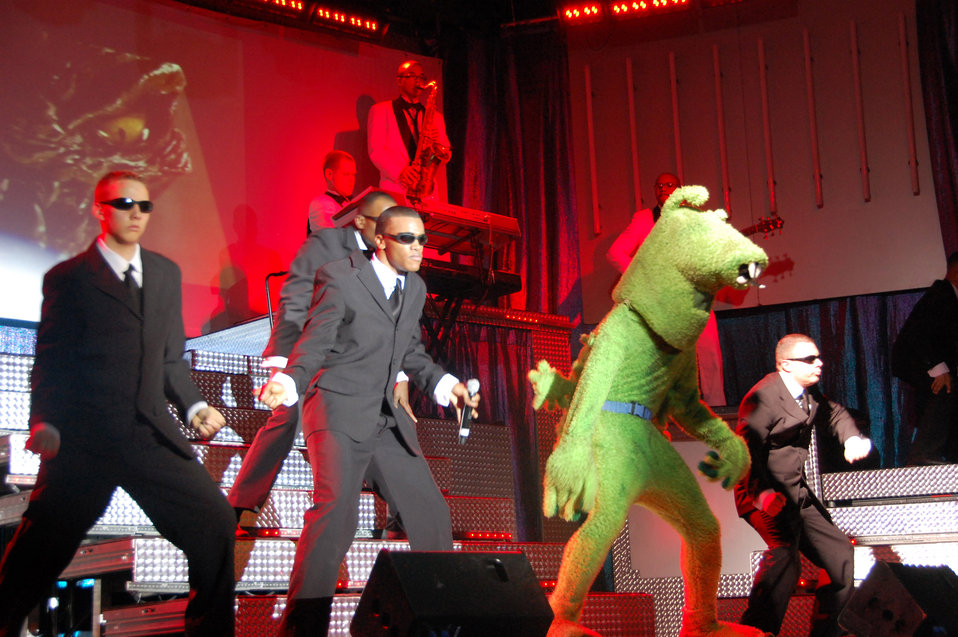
Tops In Blue Airmen entertain forces in South Korea

Members of Tops In Blue perform the song